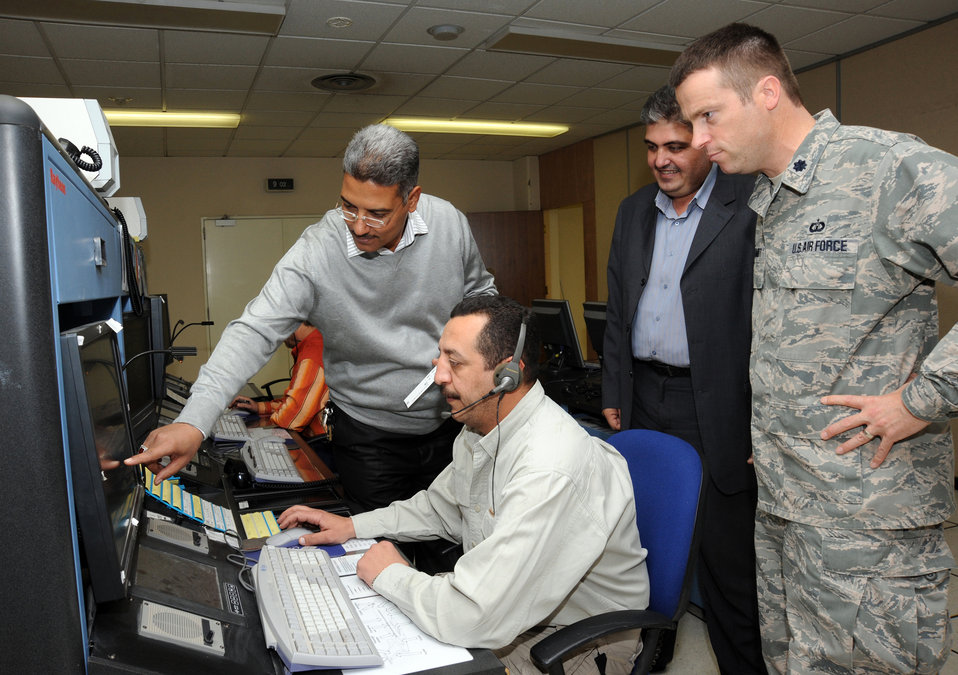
ICAA makes airways appear out of thin air

Iraqi Civil Aviation Authority members discuss the new airway structure Nov. 18, 2009. Air Force members spent seven months assisting the Iraqis with developing new air routes. These routes will increase efficiency and capacity through Iraqi airspace allowing the country to normalize airspace and increase air traffic.